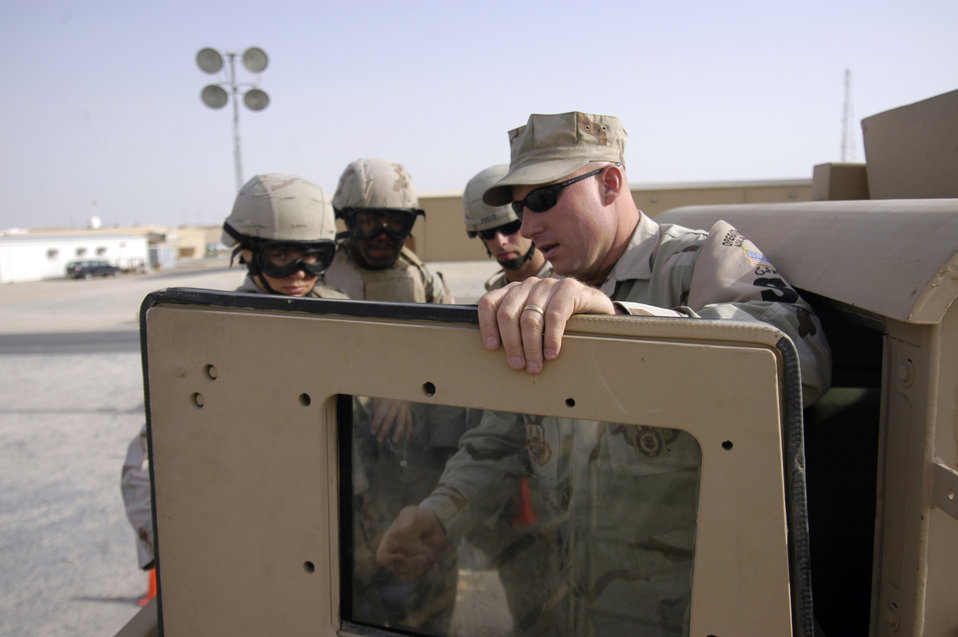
Security forces members battle HEAT

Master Sgt. John Ward instructs Airmen before they enter the Humvee egress assistance trainer July 17 at a forward operating base in Southwest Asia. The trainer aids military members with instruction on how to escape from a Humvee that has rolled over and how to avoid such accidents. Sergeant Ward is the NCO in charge of training for the 386th Expeditionary Security Forces Squadron.